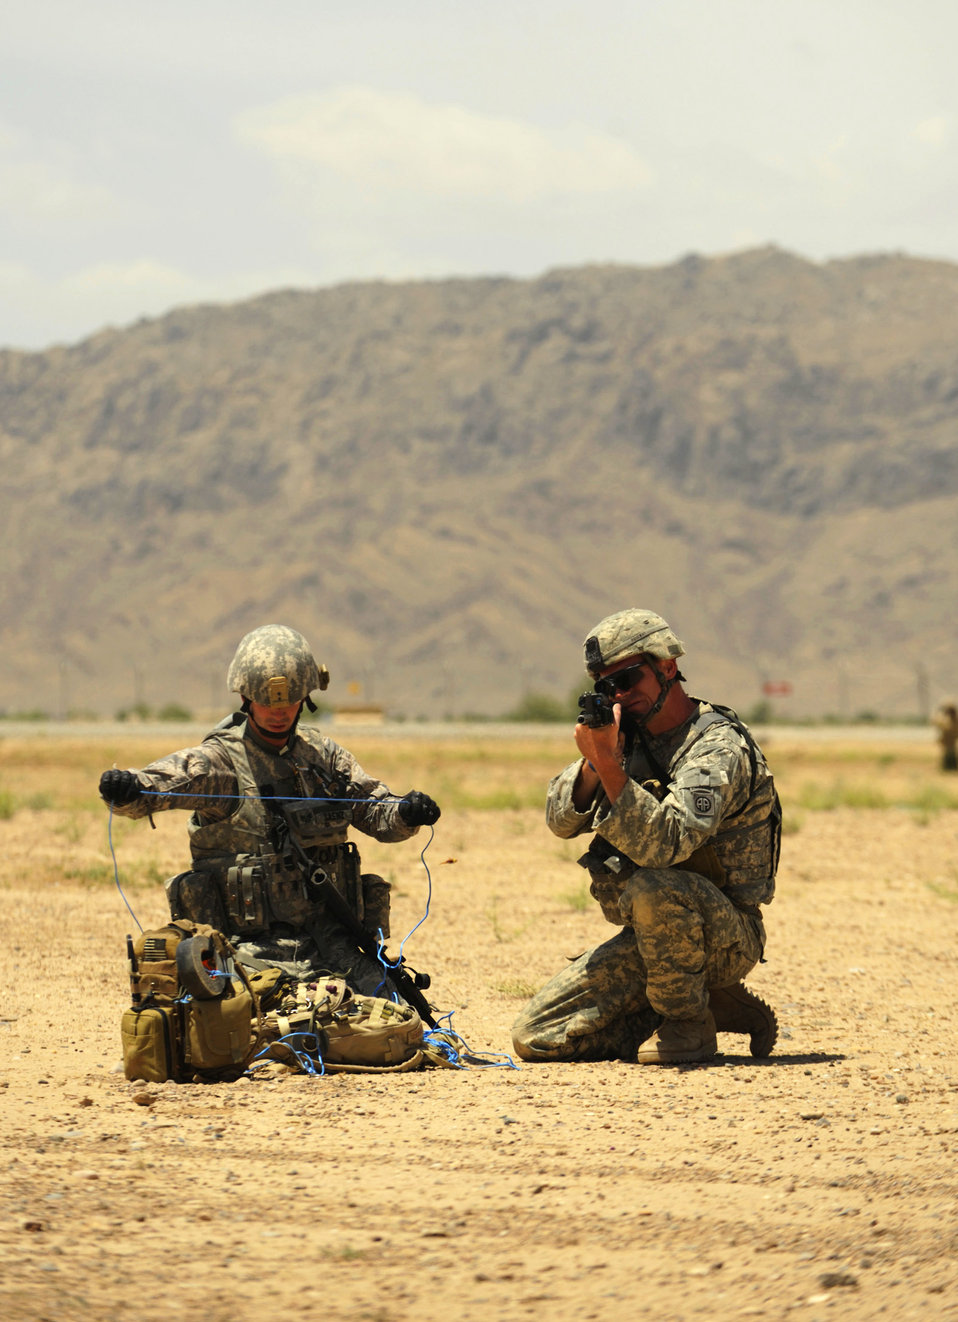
Kandahar Airmen protect servicemembers from IEDs

Staff Sgt. Scott Saenz prepares a drag line while being covered by Army Sgt. Mike Ridgeway during joint improvised explosive device training May 5 at Kandahar Airfield, Afghanistan. Sergeant Saenz is an explosive ordnance disposal technician with the 755th Explosive Ordnance Disposal unit, and Sergeant Ridgeway is an infantryman from the 82nd Airborne.